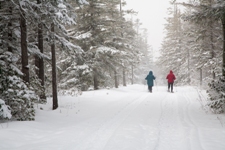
Making tracks

Snowshoe Discovery hike, White Grass Touring Center, leading to Canaan Valley National Wildlife Refuge, WV.